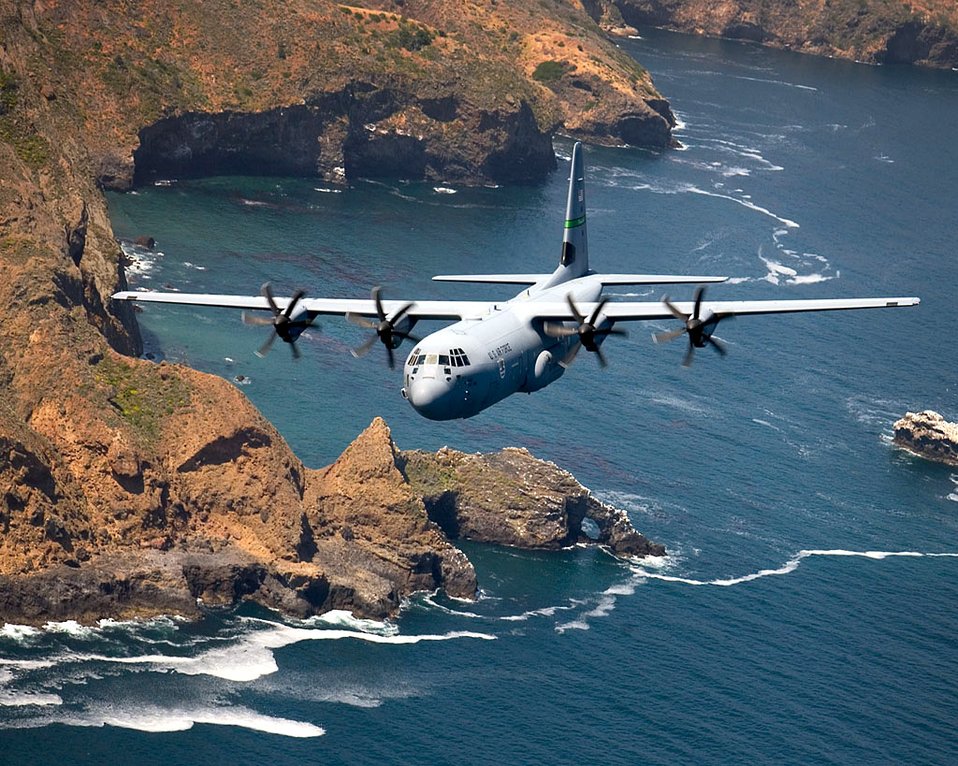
Along the coast

A C-130J Hercules from the Air National Guard's 146th Airlift Wing at Channel Island ANG Base, Calif., flies along the coast of Santa Cruz Island near California.